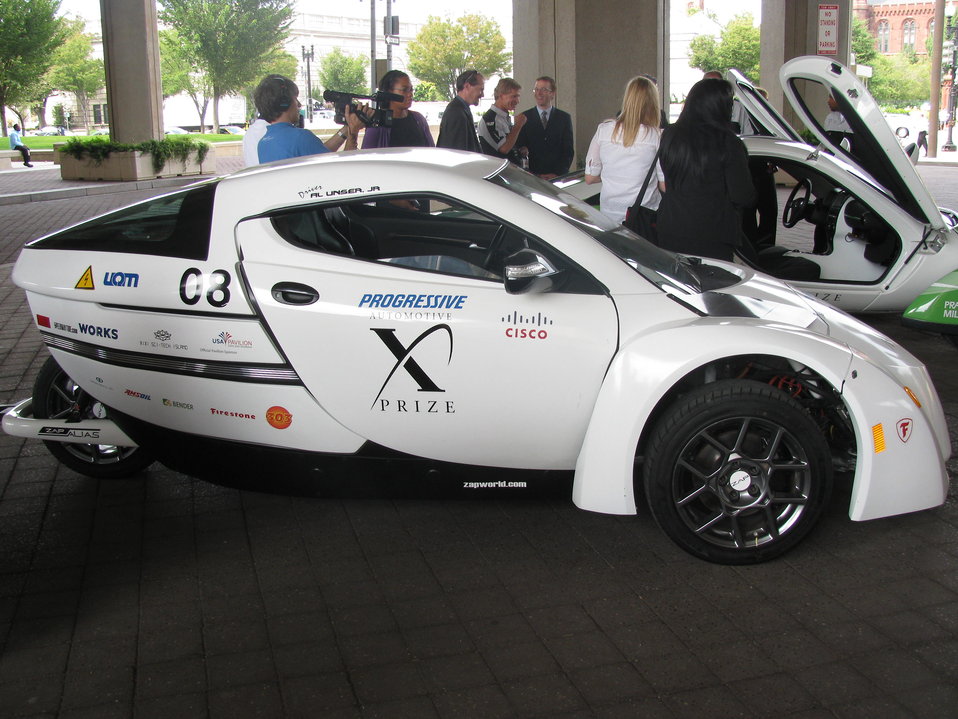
X Prize 005